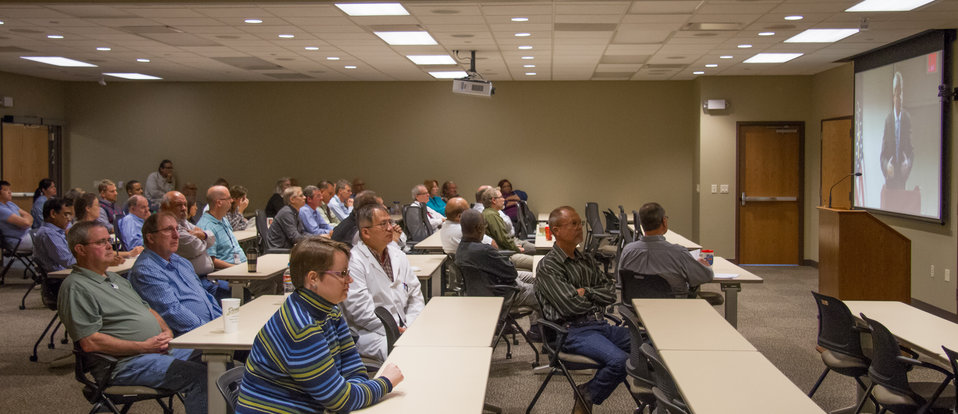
Employees of Grain Inspection, Packers and Stockyards Administration (GIPSA), National Grain Center (NGC), Kansas City, MO, participate in a teleconference meeting with Agriculture Secretary Tom Vilsa on Wednesday, Oct. 23, 2013.